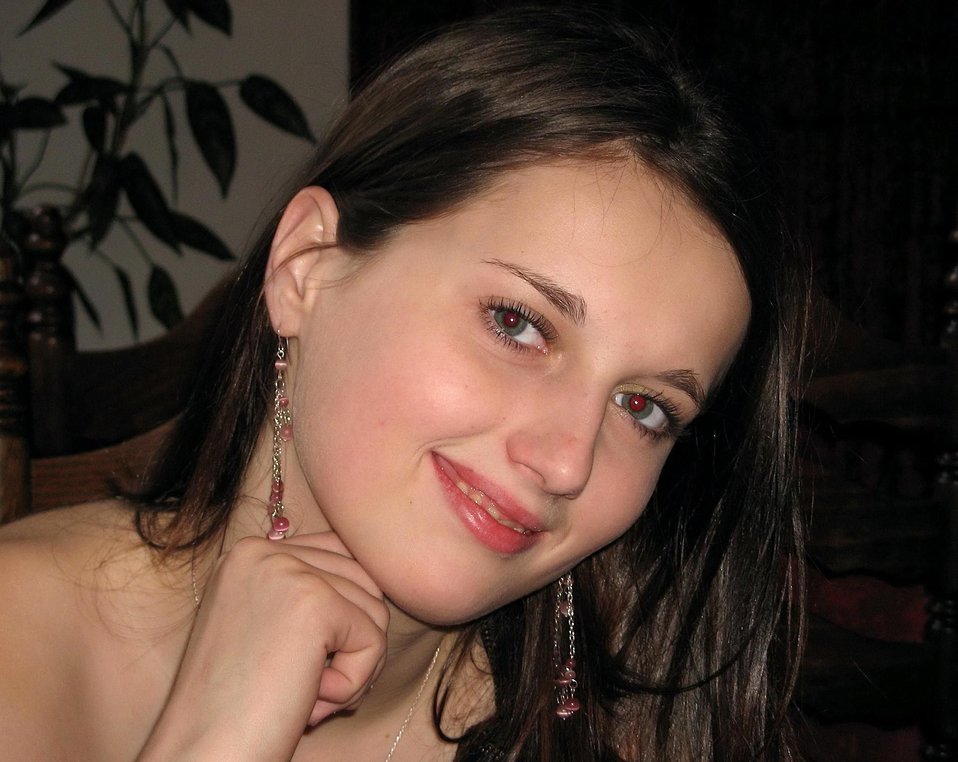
English:
Image title: Teen girl pretty face Image from Public domain images website, http://www.public-domain-image.com/full-image/people-public-domain-images-pictures/female-women-public-domain-images-pictures/teen-girl-pretty-face.jpg.html